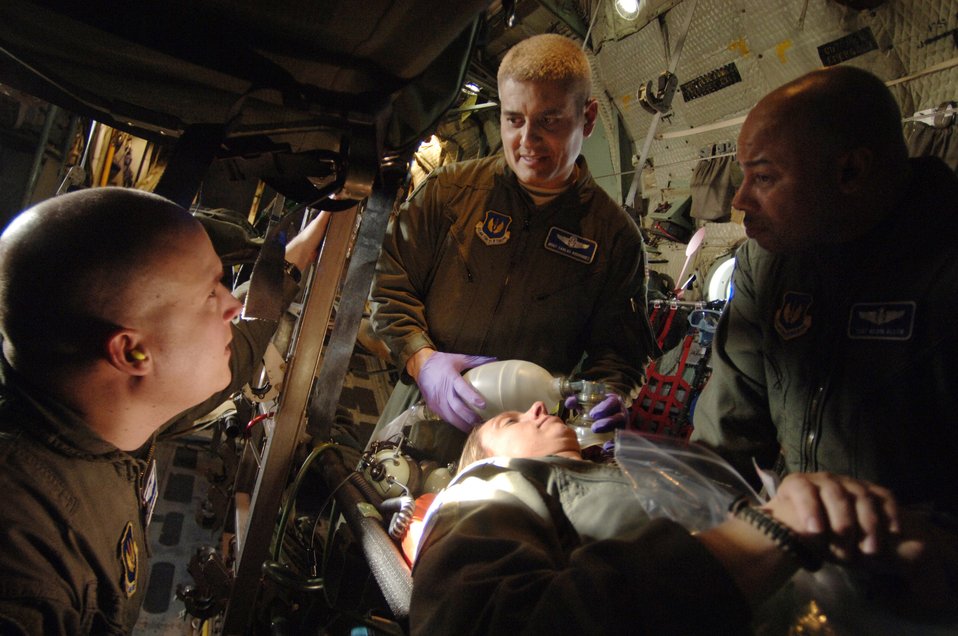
Medical professionals hone patient care skills

Tech. Sgt. Tommy Mattox describes symptoms of an anaphylactic shock